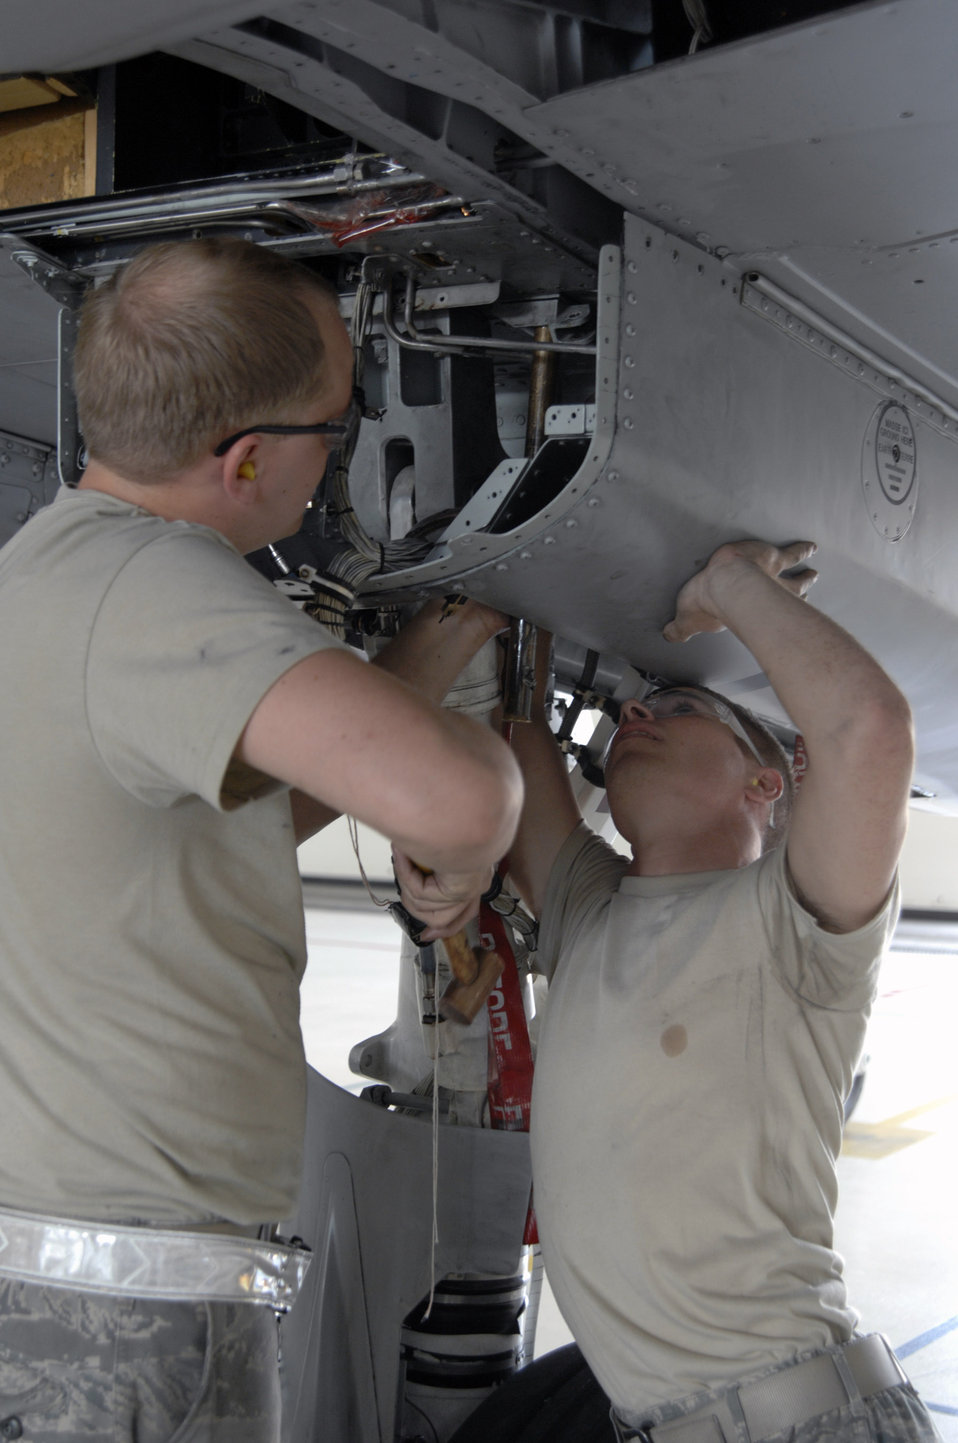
ACC maintainers expedite A-10 inspection actions

Senior Airman John Grable (left) and Airman First class Talmadge Borthwick prepare to inspect an A-10 Thunderbolt II for wing frame cracks Oct. 4 at Moody Air Force Base, Ga. A Time Compliance Technical Order was issued by Air Force Materiel Command officials identifying certain A-10s that needed to be inspected. The two Airmen are assigned to the 23rd Equipment Maintenance Squadron at Moody AFB.